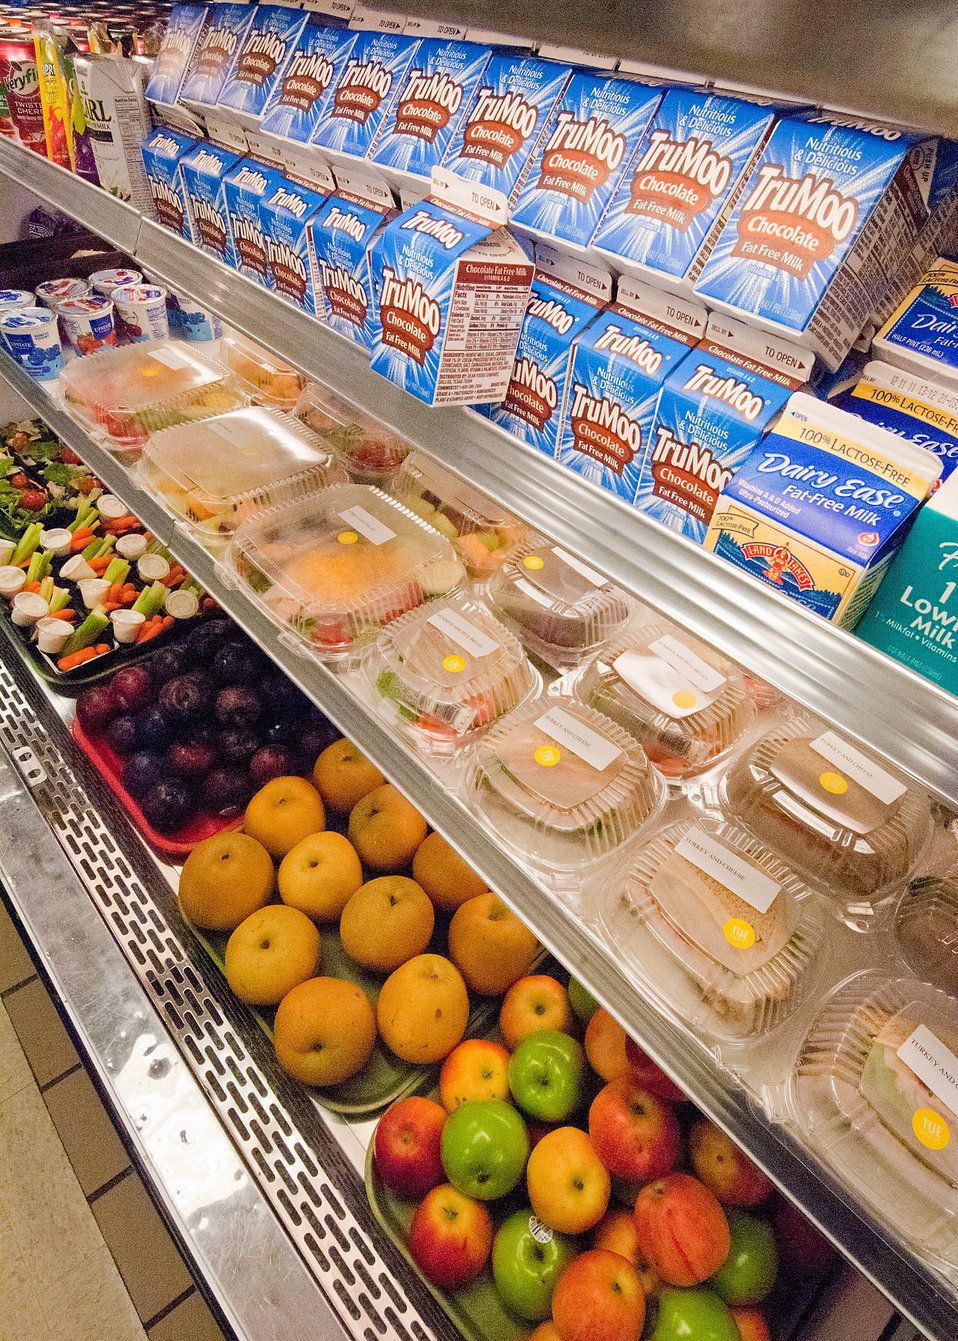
Healthy and nutritious selections of fresh fruit, salads, vegetables and turkey and cheese sandwiches at Washington-Lee High School in Arlington, Virginia for lunch service on Wednesday, October 25, 2011. The fruit, salads, sandwiches, vegetables and wraps are made available through the National School Lunch Program. The National School Lunch Program is a federally assisted meal program administered by the United States Department of Agriculture, Food and Nutrition Service operating in public, nonprofit private schools and residential child care institutions. It provides nutritionally balanced, low-cost or free lunches to children each school day.